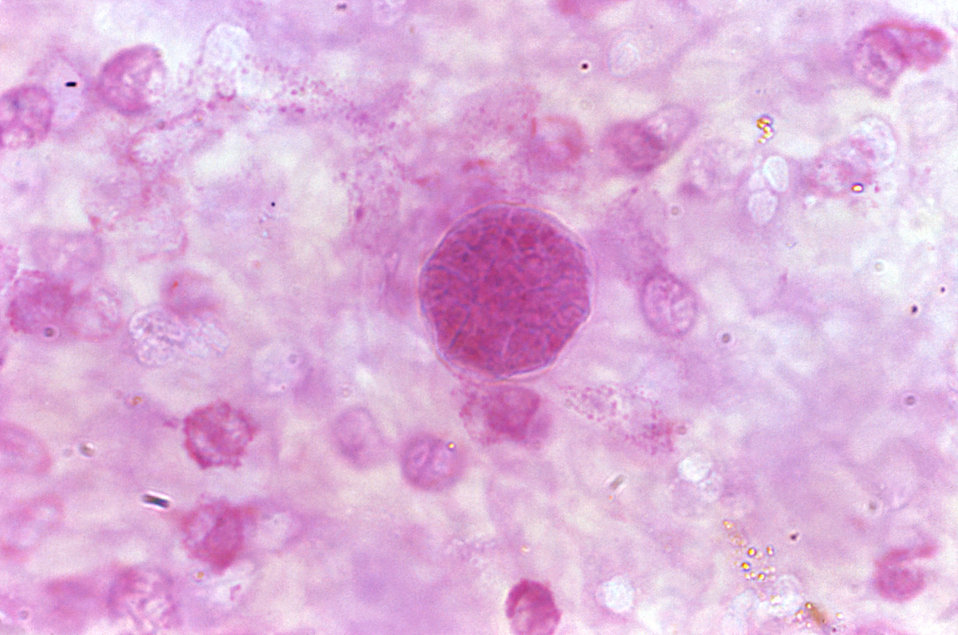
This photomicrograph revealed some of the histopathologic characteristics found within a pus specimen, which was prepared using periodic acid-Schiff (PAS), and which had been harvested from a skin lesion in a case of cutaneous coccidioidomycosis. In this particular specimen you'll note the chlamydospore, or immature spherule of a Coccidioides immitis fungal organism. As the reproductive structure of this, as well as other types of fungi, this spherule is also known as a chlamydoconidium, and contains the organism's endospores.